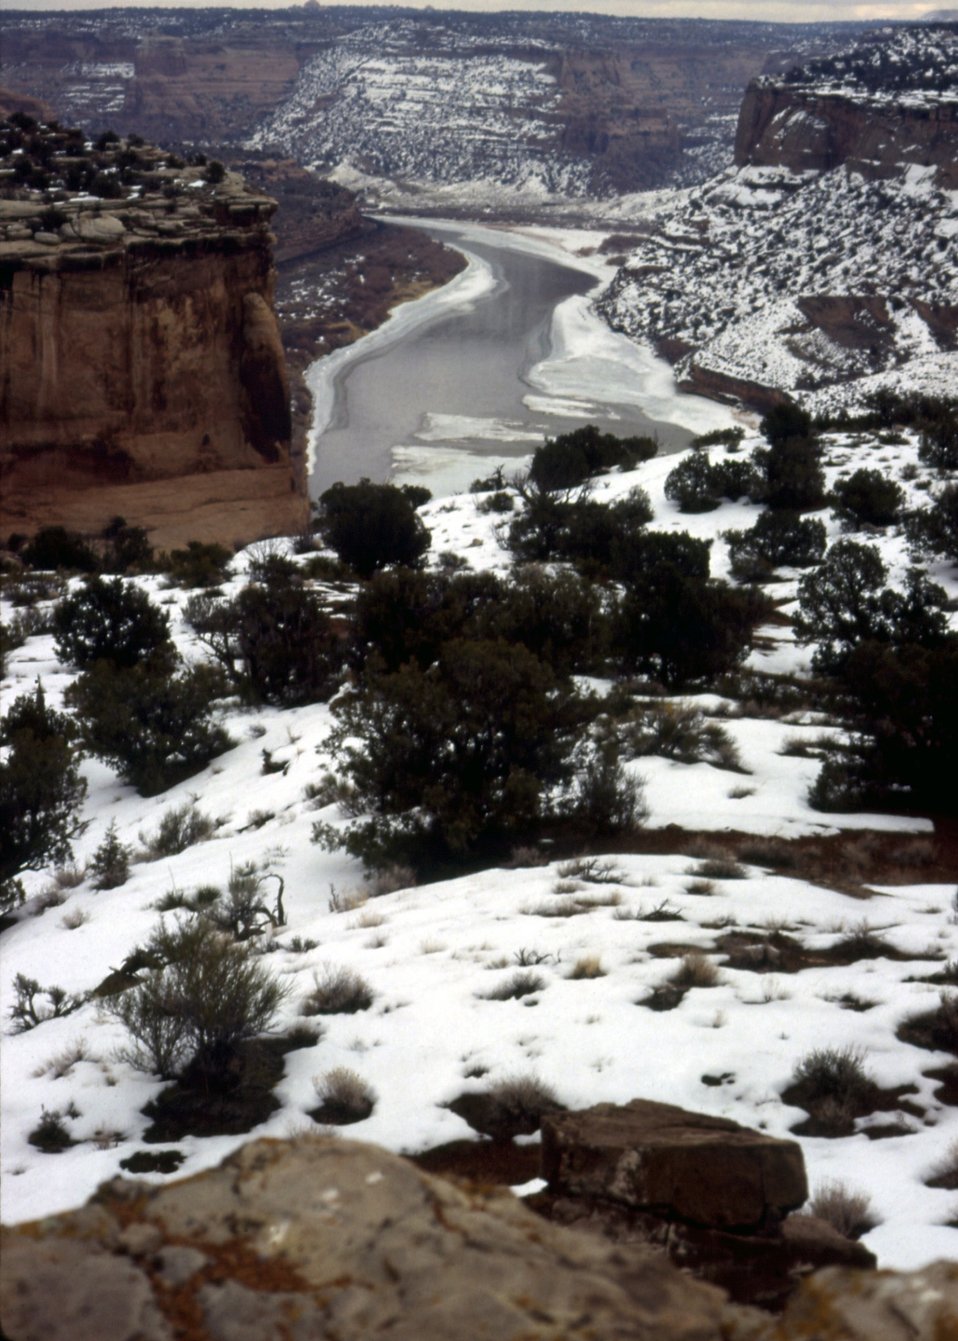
Casrel Peak